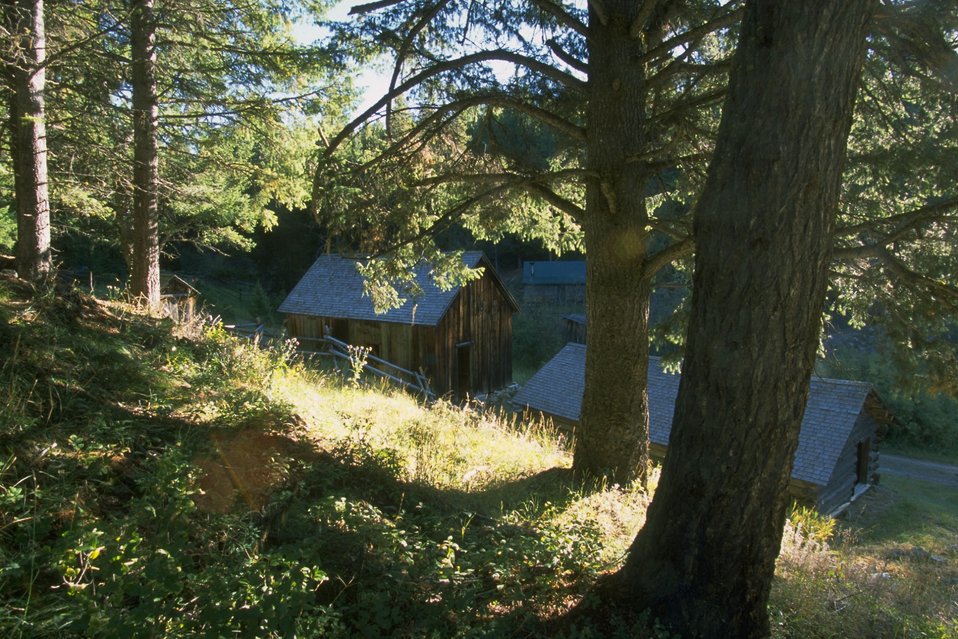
Garnet Ghost Town